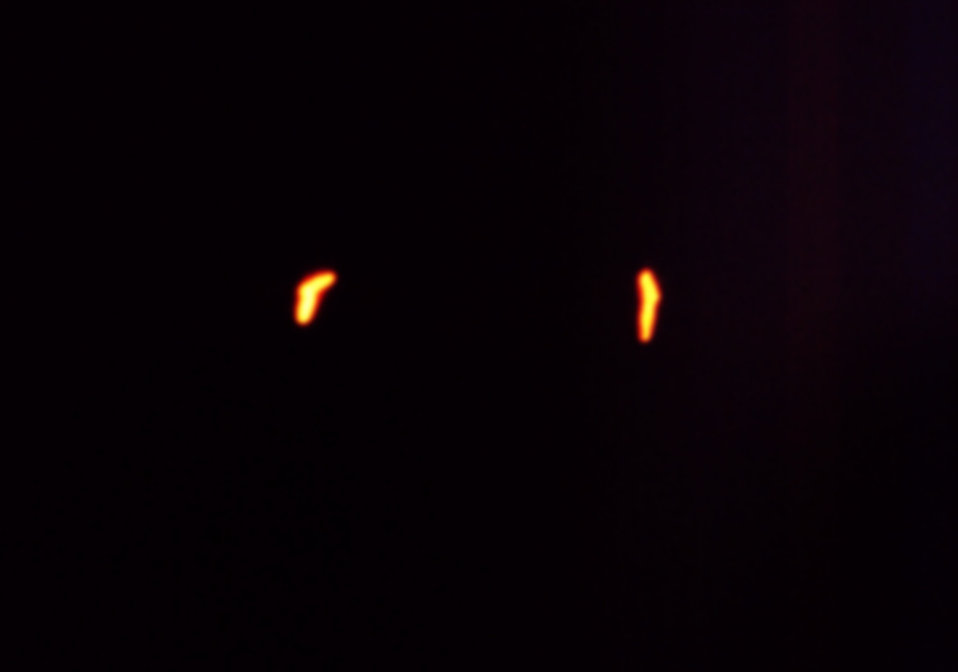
This 1971 photomicrograph of a sputum smear, which had been stained using the Morse method of fluorescent acid-fast staining technique, revealed the presence of two Mycobacterium tuberculosis, rod-shaped bacteria, otherwise known as bacilli.